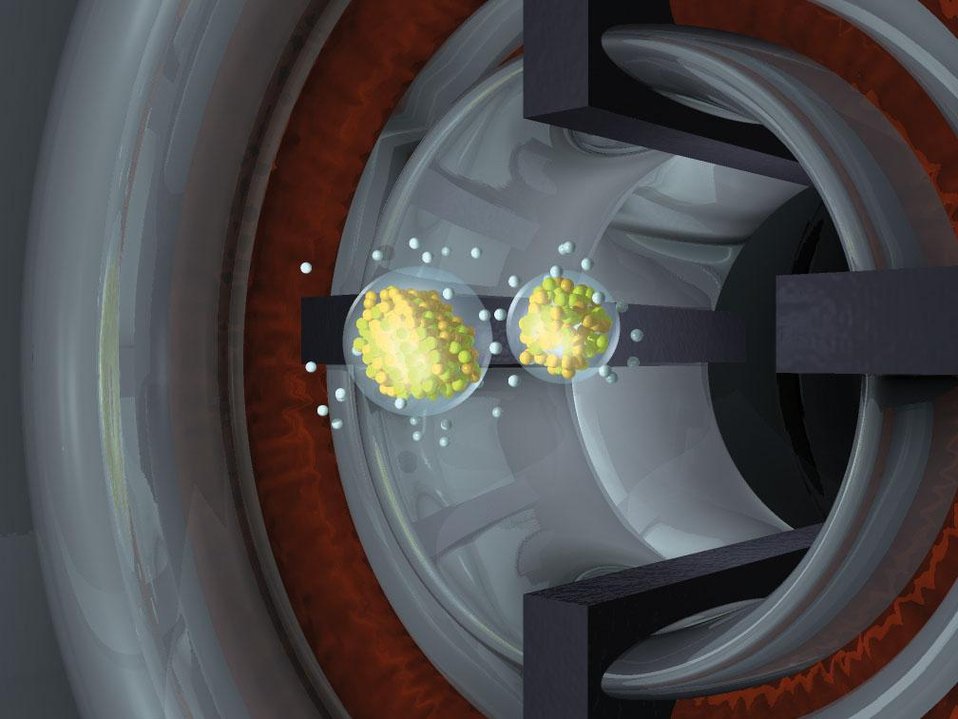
SIMULATION OF THE SPONTANEOUS FISSION DECAY THAT EVENTUALLY RESULTS IN TWO SEPARATE ATOMS OF PREVIOUSLY KNOW ELEMENTS.

SCIENTISTS AT DOE'S LAWRENCE LIVERMORE NATIONAL LABORATORY, IN COLLABORATION WITH RESEARCHERS FROM THE JOINT INSTITUTE OF NUCLEAR RESEARCH (JINR) IN RUSSIA, HAVE DISCOVERED THE TWO NEWEST SUPER-HEAVY ELEMENTS, ELEMENT 113 AND ELEMENT 115. IN THESE DECAY CHAINS, ELEMENT 113 IS PRODUCED VIA THE ALPHA DECAY OF ELEMENT 115. THE EXPERIMENTS PRODUCED FOUR ATOMS EACH OF THE TWO ELEMENTS THROUGH THE FUSION REACTION OF CALCIUM-48 NUCLEI IMPINGING ON AN AMERICIUM-243 TARGET.